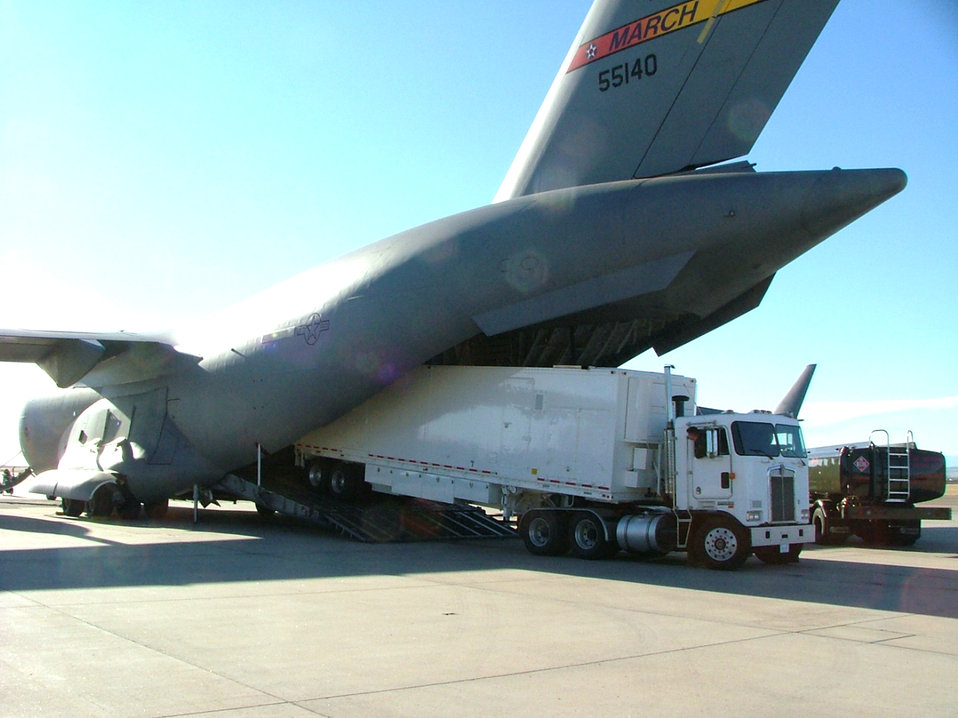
GM-3 vehicle deploys aboard C-17 first time

The 4th Space Operations Squadron's Mobile Operations Flight loads the Ground Mobile-3 vehicle into a C-17 Globemaster III Nov. 25 at Peterson Air Force Base, Colo. The GM-3 and a team of 4th SOPS Airmen from Schriever Air Force Base, Colo., will provide secure communication effects from their deployed location at Andersen AFB, Guam.